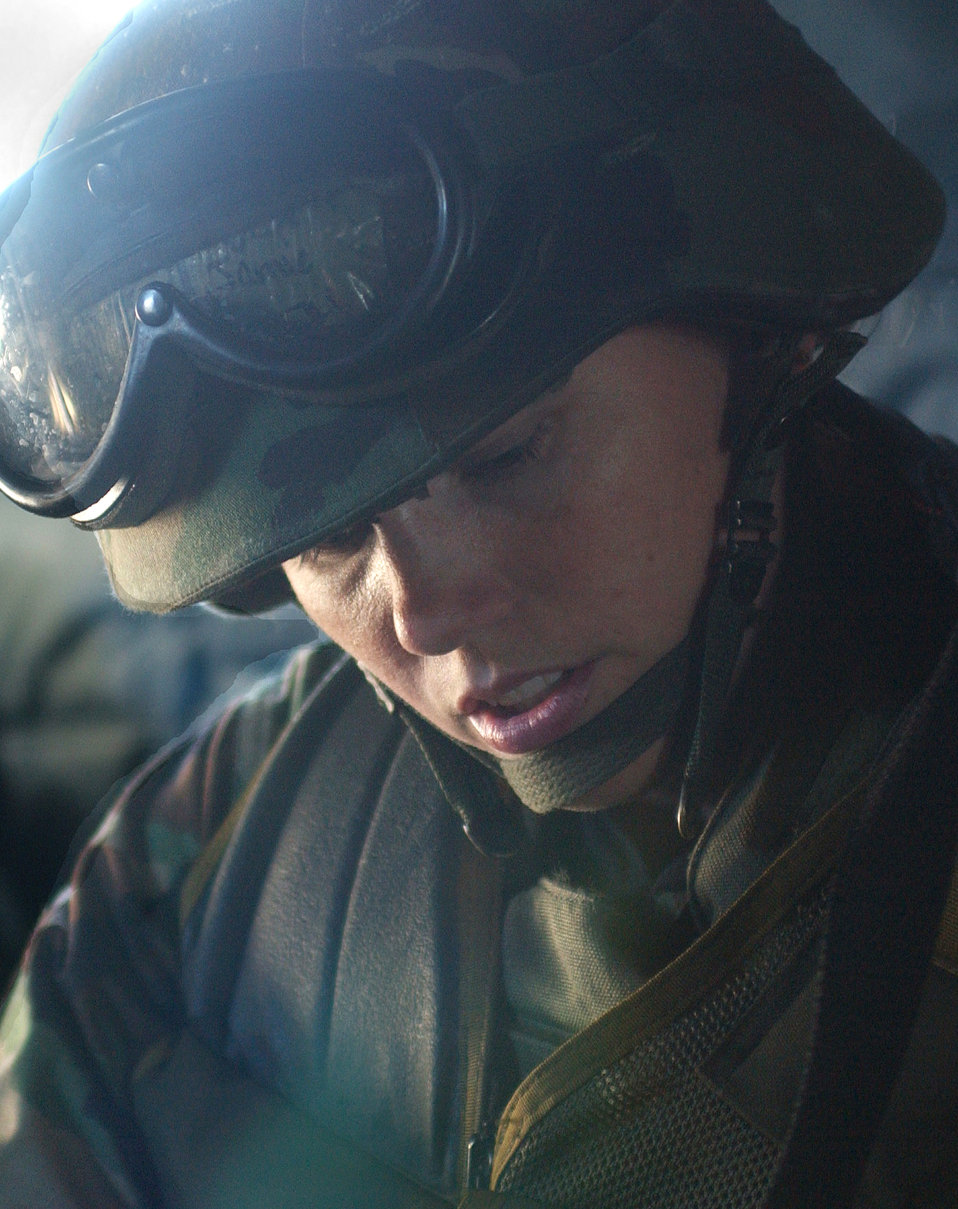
Joint training

AVIANO AIR BASE, Italy -- Staff Sgt. Jamie Eichhorn participates in joint helicopter deployment training with the U.S. Air Force, Navy and the Italian carabineri here recently. Sergeant Eichhorn is assigned to the 31st Security Forces Squadron.